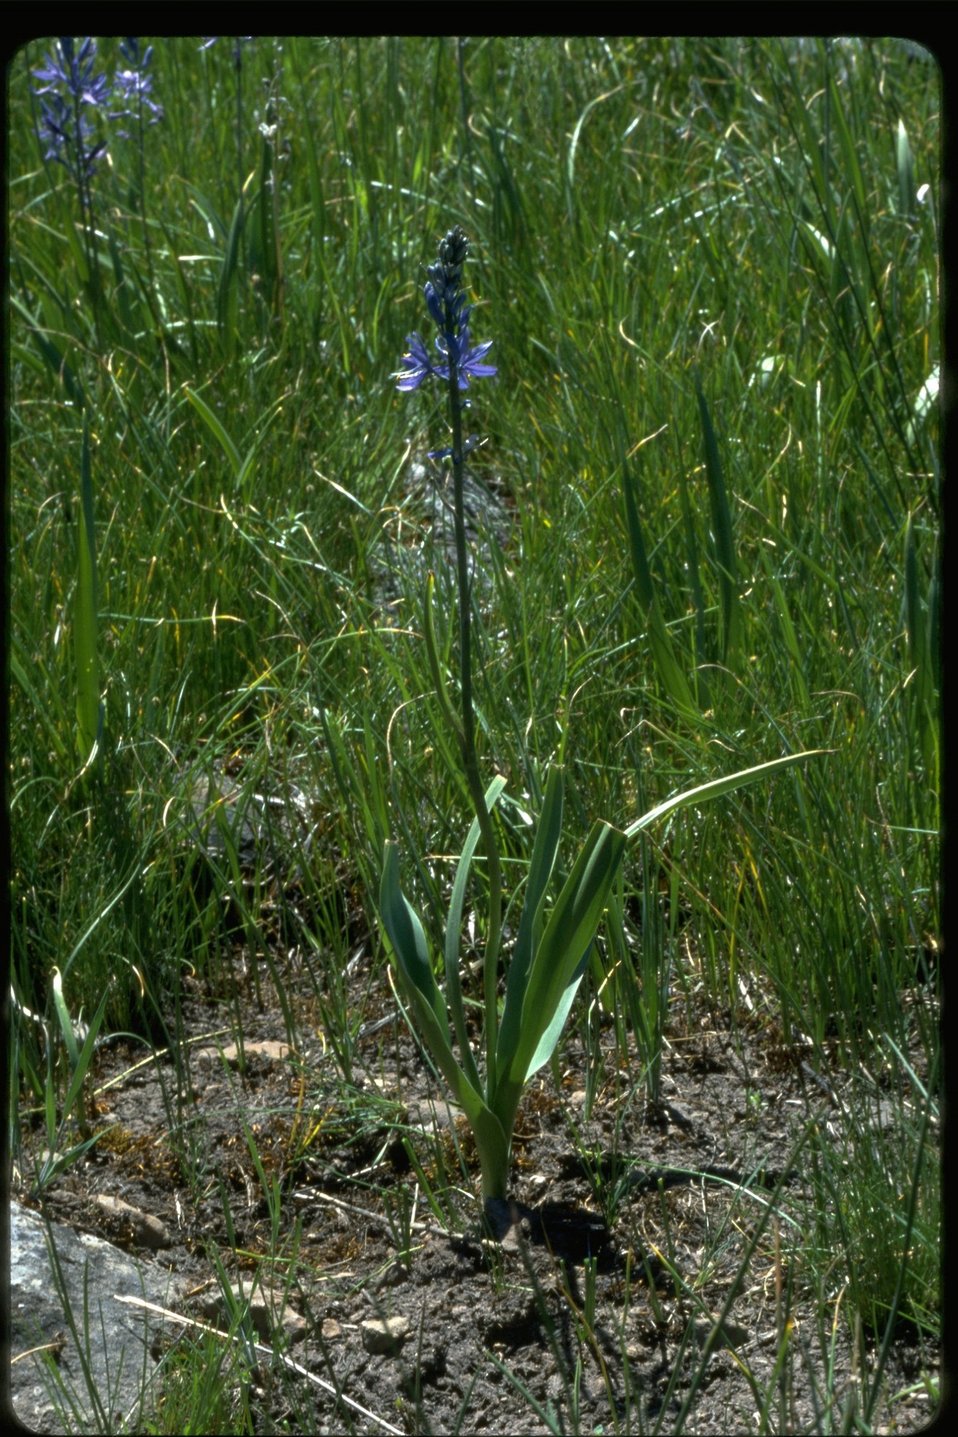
Medium long shot of Blue Camas showing leaves at ground level.